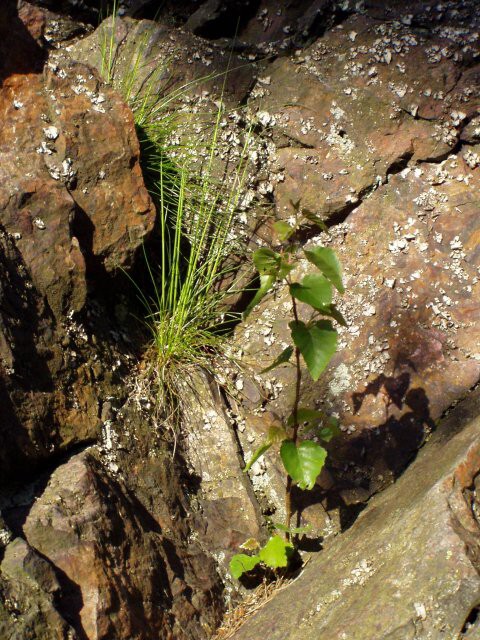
Čeština: Andrejšky - detail